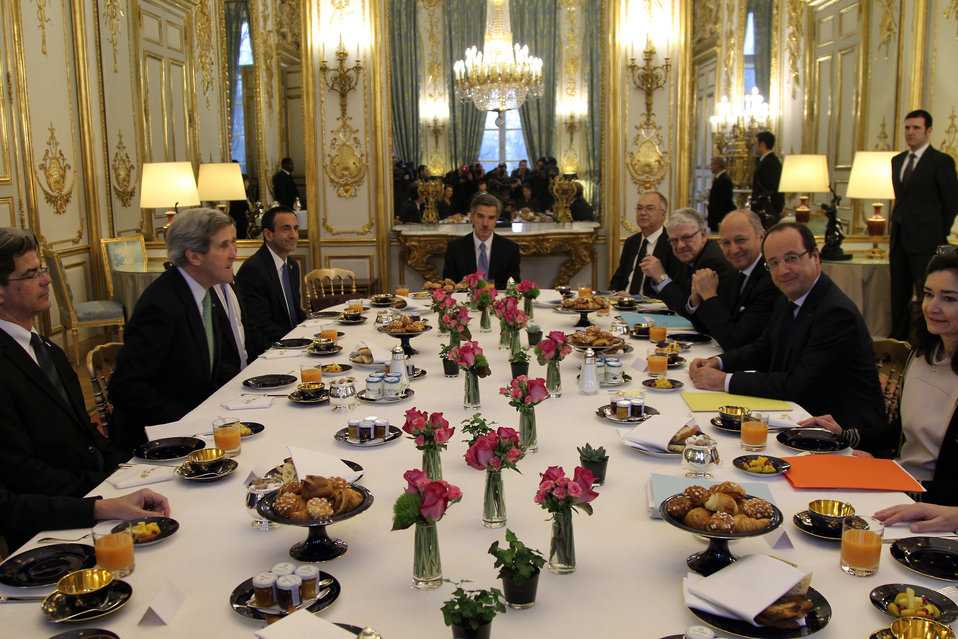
Secretary Kerry Works With President Hollande

U.S. Secretary of State John Kerry attends a working breakfast with French President Francois Hollande in Paris, France, on February 27, 2013.